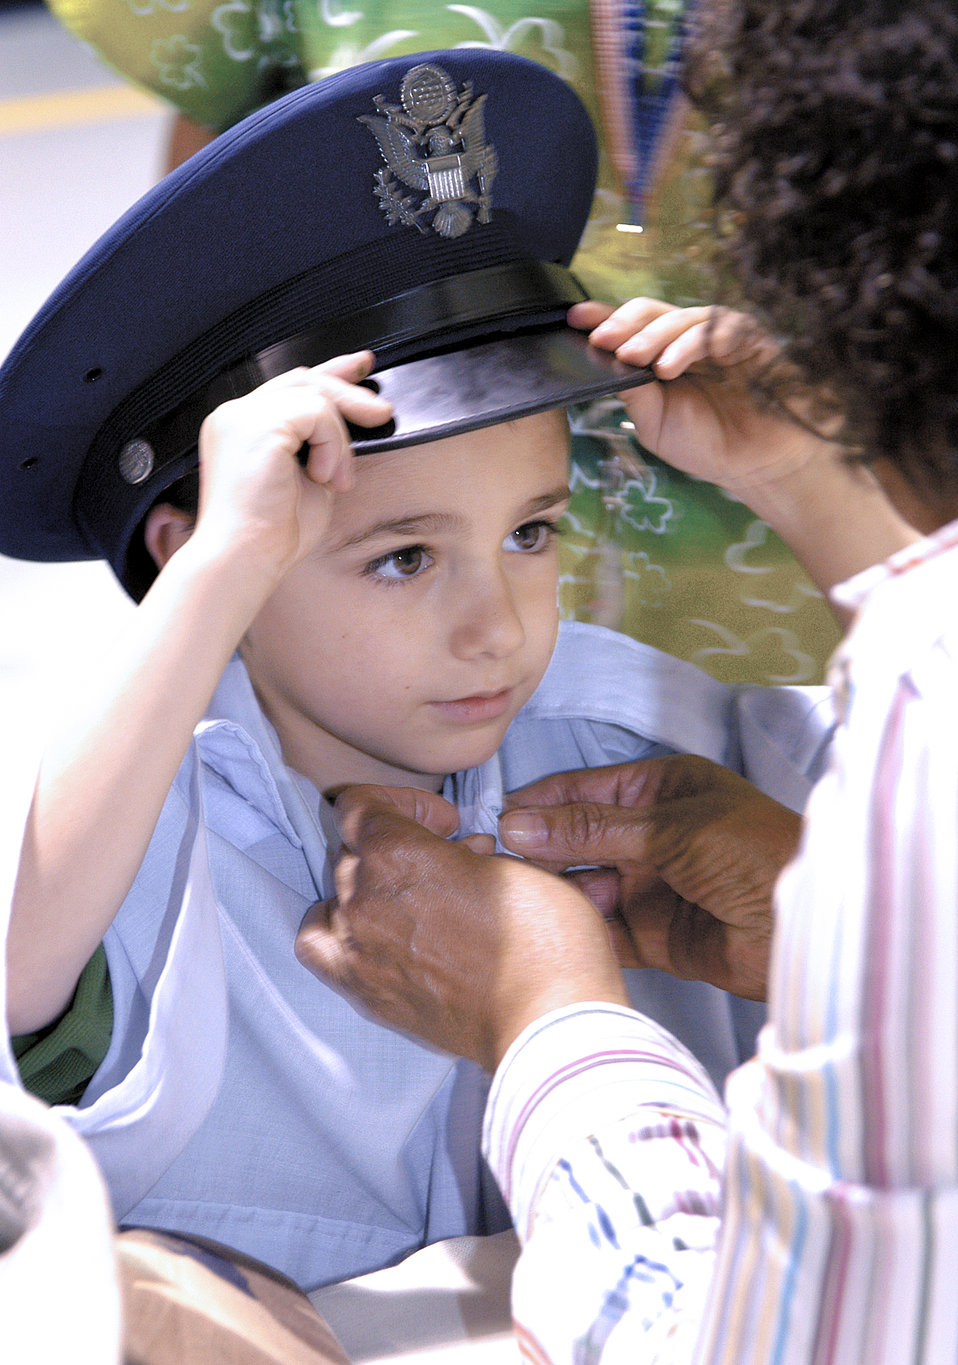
Through the eyes of a child

TINKER AIR FORCE BASE, Okla. -- Mason Alexander is swallowed up in Air Force blue at a display where children had their photos taken in grown-up uniforms during a Bring a Child to Tinker event. The event gave employees a chance to show the children their work world through displays, videos and demonstrations.